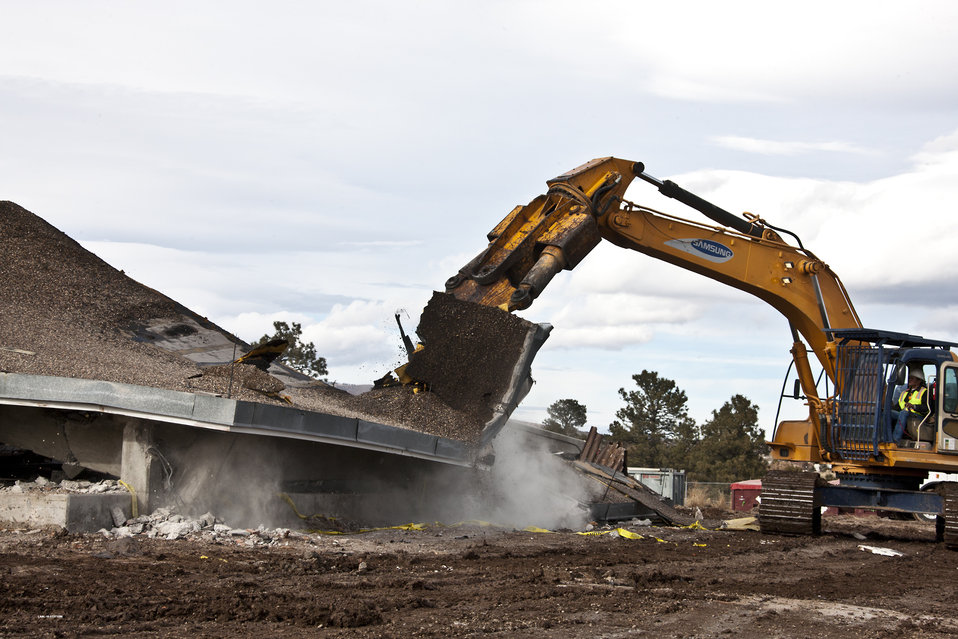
Recovery Act Workers Demolish Last of 24 Buildings and Structures at Los Alamos TA-21

Workers on Dec. 21, 2010 demolished the last and largest of 24 buildings and structures at Los Alamos National Laboratory’s Technical Area 21 slated for removal with Recovery Act funding.

Due to their age and the purposes they served, many of the buildings and structures at TA-21 were contaminated with asbestos and other chemicals and radioactive materials such as tritium, plutonium and americium. Demolition was not as easy as merely swinging a hammer or a wrecking ball and required thorough preparation and careful decontamination.